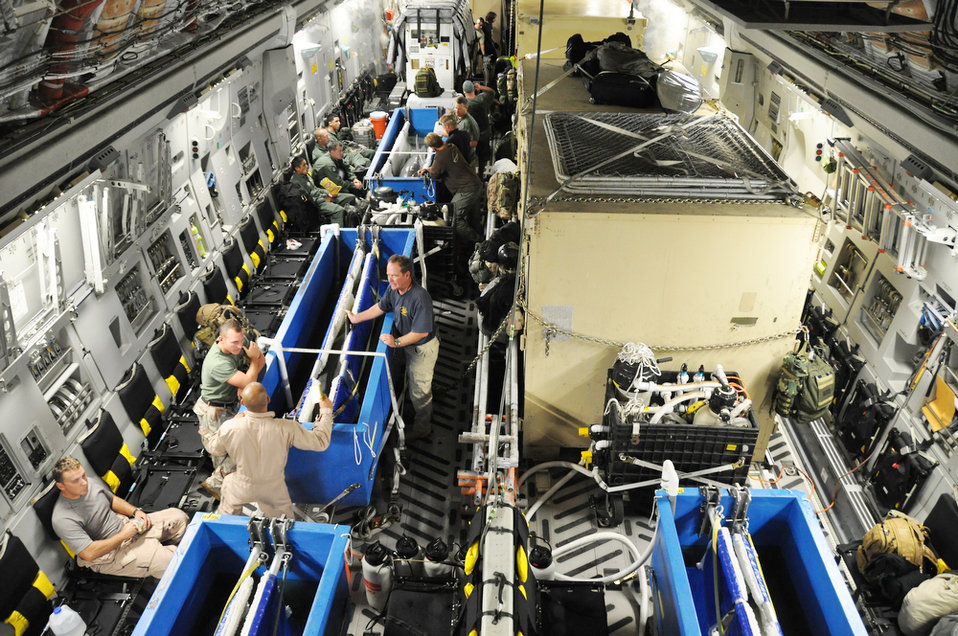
Dolphins fly to New Caledonia with Hickam C-17 crew

Airmen, Sailors and contractors talk and manage dolphins while aboard a C-17 Globemaster III Nov. 8, 2009, en route to New Caledonia. The crew is taking the Sailors and dolphins to Noumea, New Caledonia, where they will participate in Lagoon Minex 2009, which is a humanitarian project where U. S. Navy, French, Australian and New Zealand demolition crews will remove mines left over from World War II from the surrounding water of the area. The Airmen are from Hickam Air Force Base, Hawaii, the Sailors are from Navy Mobile Unit 1 from San Diego, and contractors are from the Navy Marine Mammals Program.